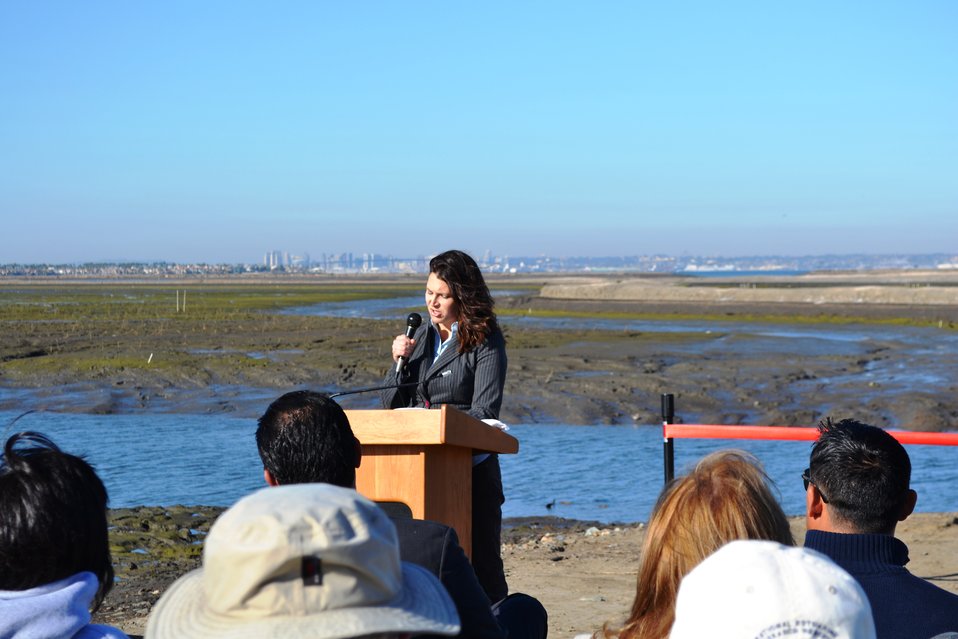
Carolyn Lieberman, USFWS Coastal Program, Southern California Coordinator

Carolyn speaking at the ribbon-cutting ceremony for the Western Salt Ponds portion of the South San Diego Bay Restoration & Enhancement Project.